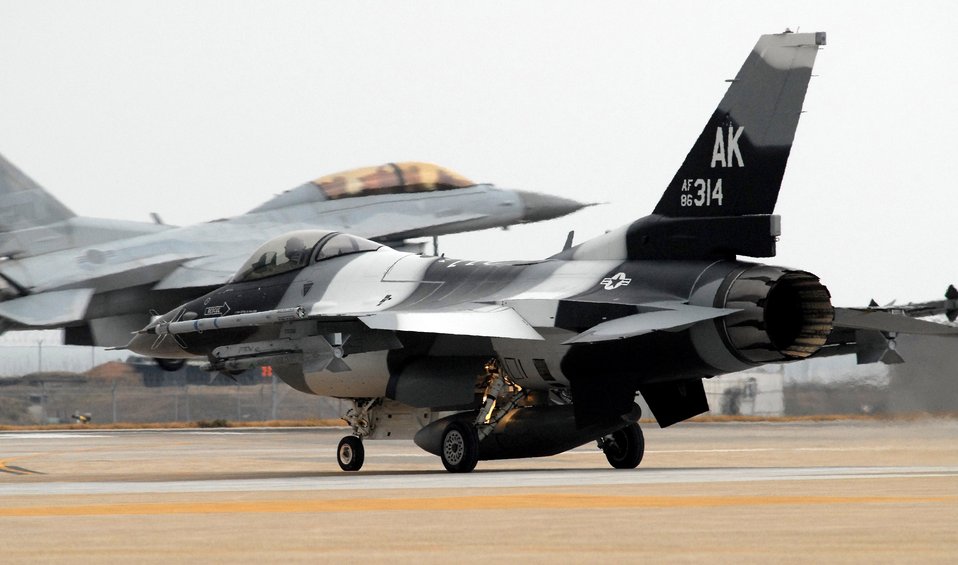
Here come the aggressors

An F-16 Fighting Falcon from the 80th Fighter Squadron at Kunsan Air Base, South Korea, waits for clearance as another F-16 touches down. The jets feature a new arctic paint scheme that will be used during upcoming Red Flag Alaska training exercises at Eielson Air Force Base, Alaska.